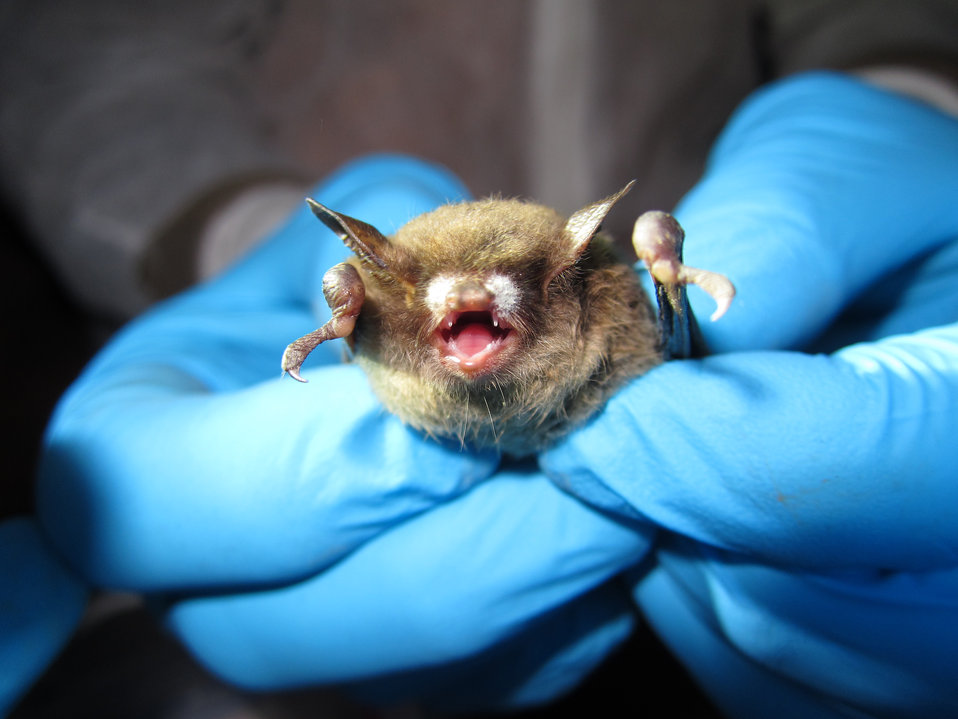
Little brown bat with visible symptoms typical of WNS

Note the white deposit, likely growth of Geomyces destructans, on this adult male Myotis lucifugus (little brown bat) at a hibernaculum in Hardin County, Illinois. Samples of this fungal growth are presently being cultured in the laboratory. 20 February 2013.